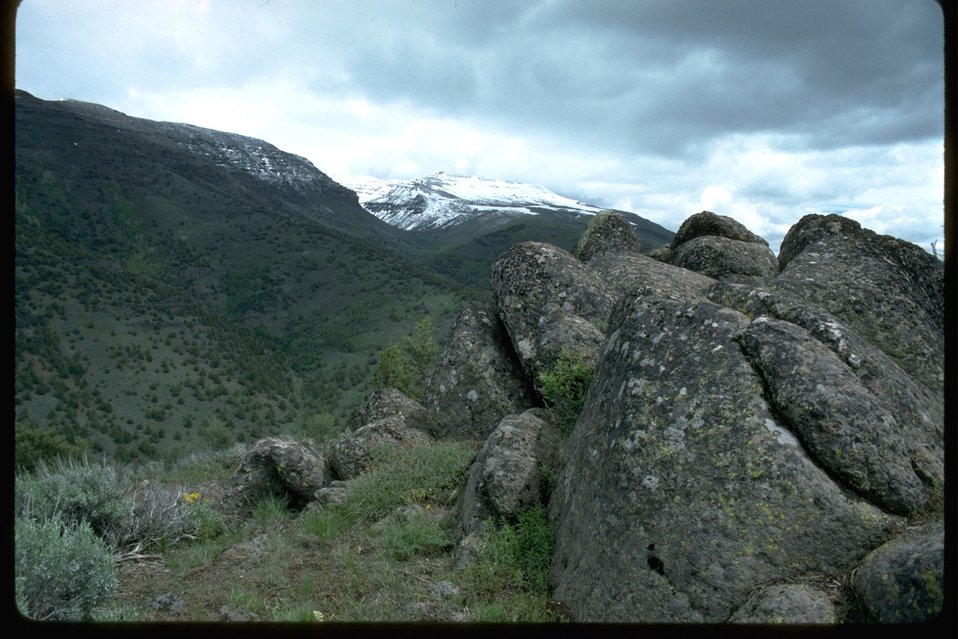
Little Indian Canyon and Ankle Mountain from Rooster Comb grade on Steens Mountain.